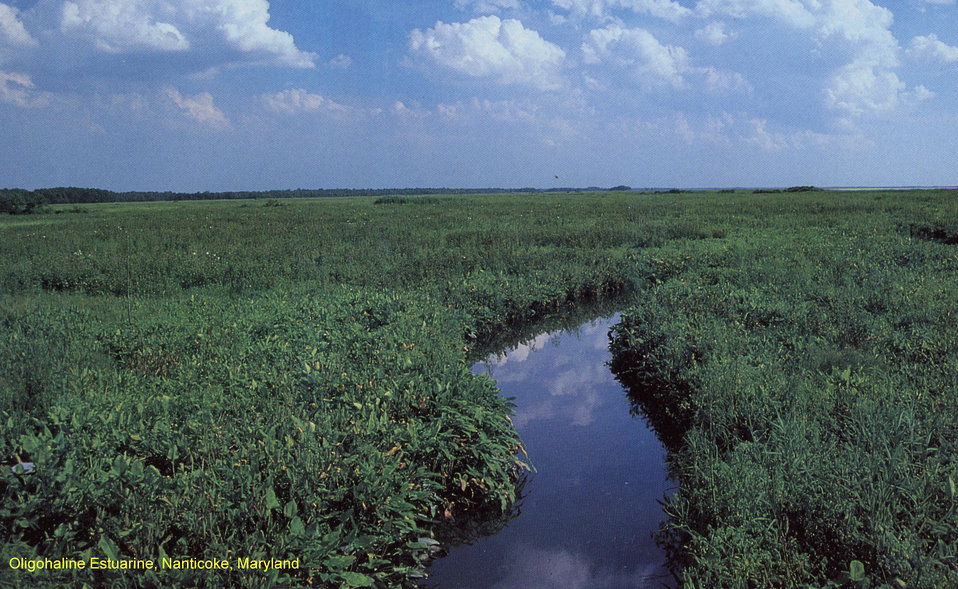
Slightly Brackish (Oligohaline) Marsh, Nanticoke, Maryland